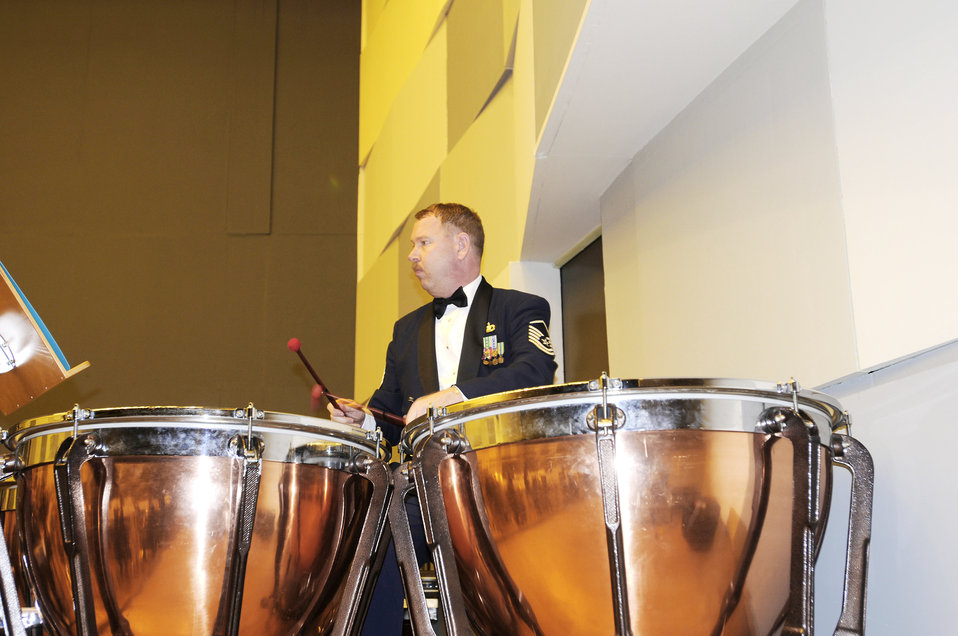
USAFE Band tours Poland

Master Sgt. James Bartelt plays the timpani drum during a U.S. Air Forces in Europe Band concert in Wroclaw, Poland, Oct. 20, 2009. The 41-piece band performed six concerts in Poland in support of the USAFE commander's international relations program in partnership with the U.S. State Department.